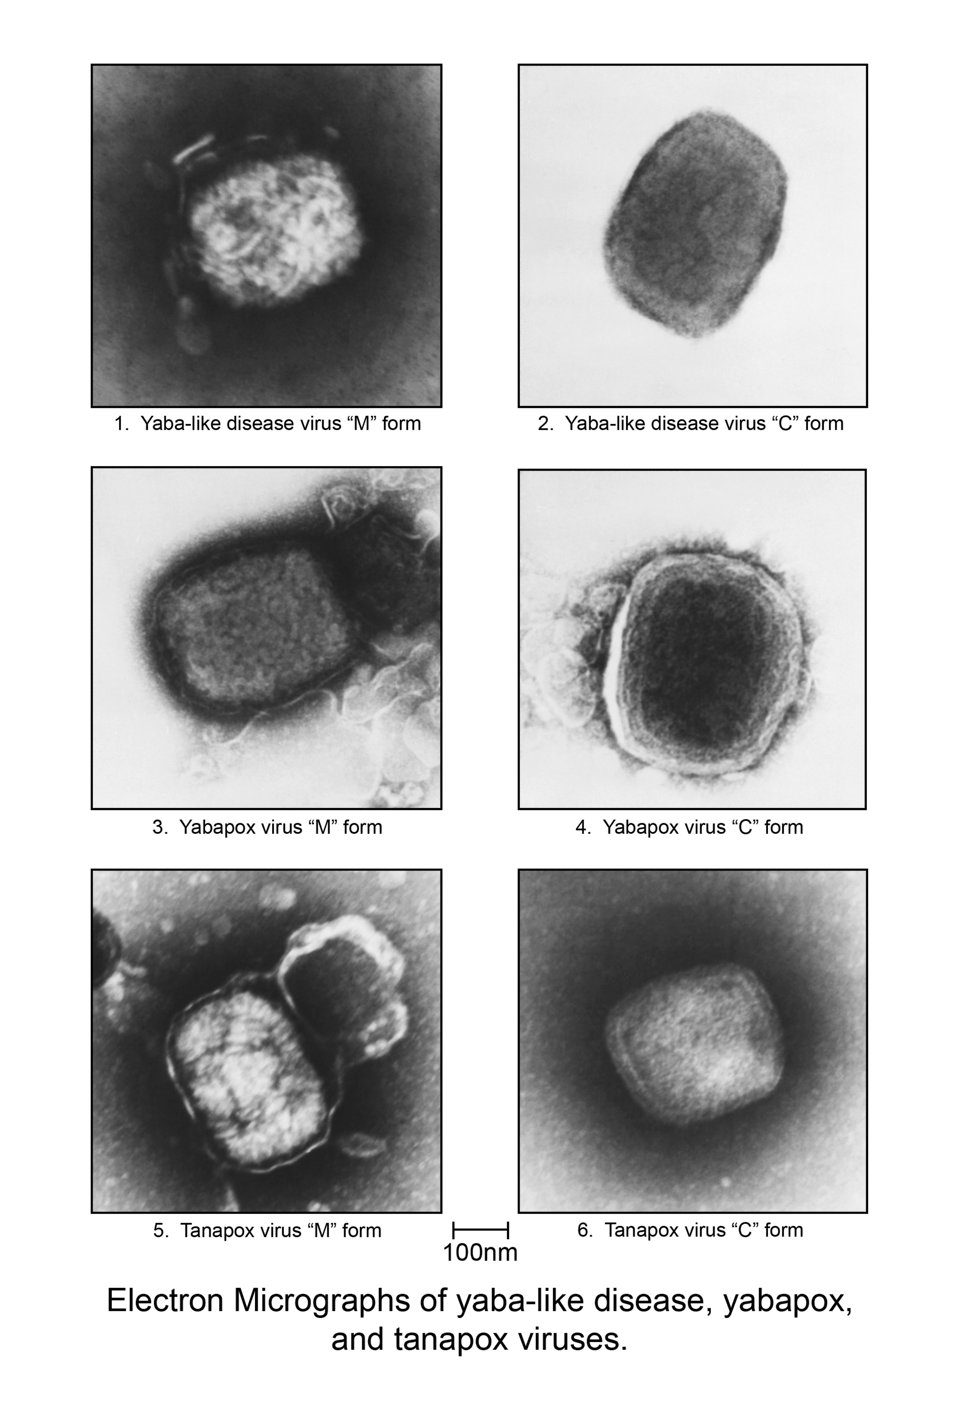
This compilation of a number of transmission electron micrographs (TEM), revealed some of the morphologic differences displayed by three Poxviridae family members: Yaba-like disease (YLD) virus, Yabapox virus, and Tanapox virus, each in its 'M' and 'C' forms. 'M' form represents the virions in their 'mulberry' configuration, whereupon, the capsid appears much like a mulberry, and the 'C' form represents the capsular appearance of the virions' capsid, or external protein coat.